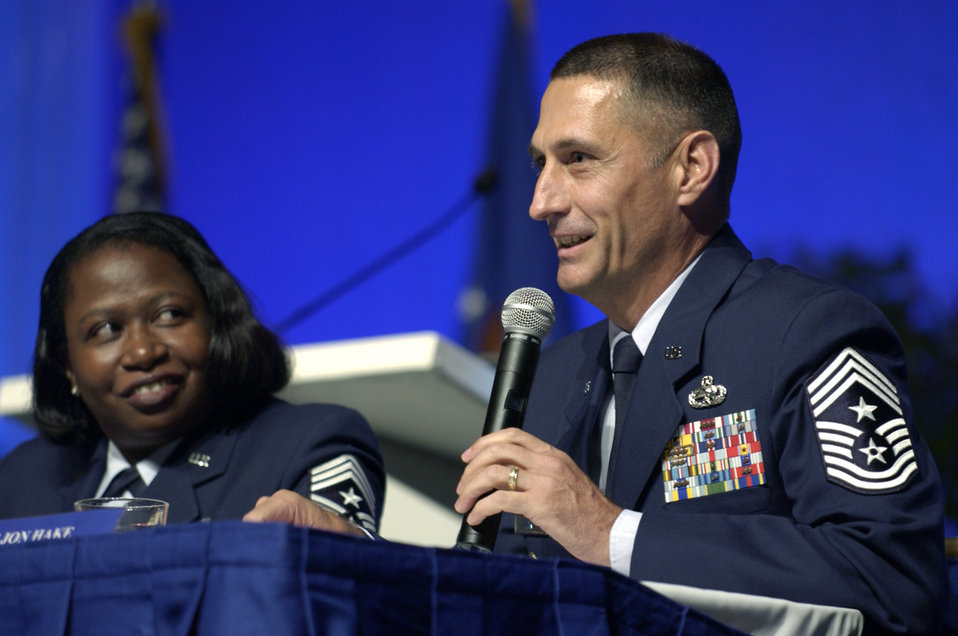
Command chiefs address Airmen's concerns

WASHINGTON -- Chief Master Sgt. Cheryl Adams (left) listens as Chief Master Sgt. Jonathan Hake speaks to the crowd during a forum at the Air Force Association's 2004 Air and Space Conference and Technology Exposition here Sept. 13. Chief Adams is command chief for Air Force Reserve Command, and Chief Hake is command chief for Air Force Materiel Command.